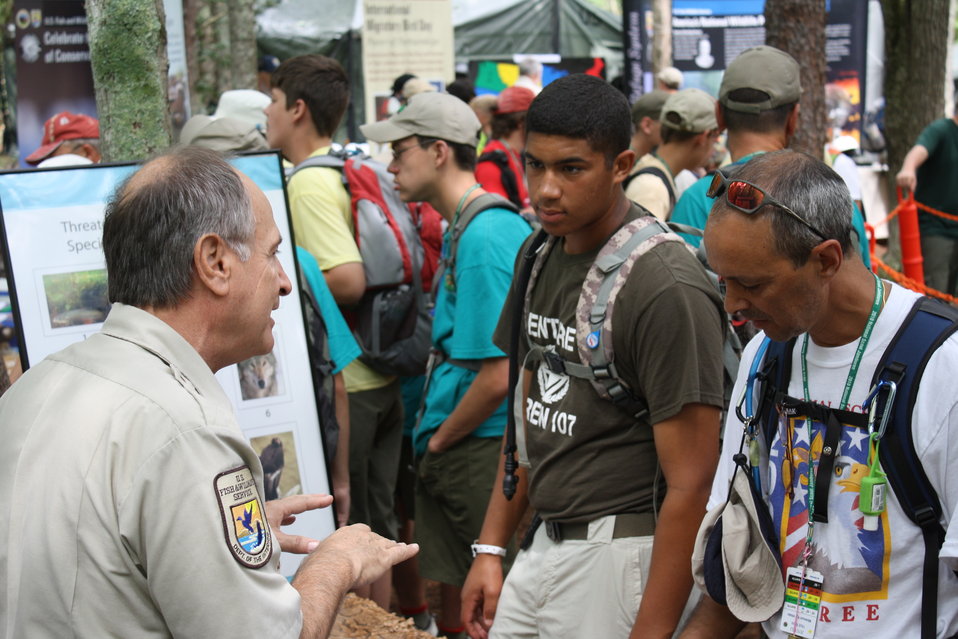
Boy Scout Jamboree 2010